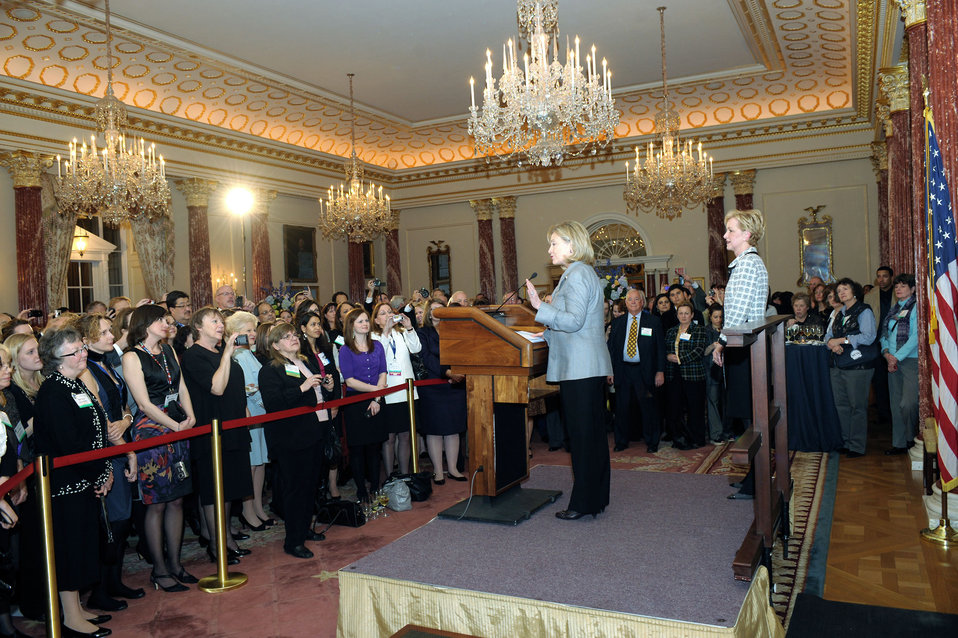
Secretary Clinton Delivers Remarks

U.S. Secretary of State Hillary Rodham Clinton, with Assistant Secretary of State for Educational and Cultural Affairs Ann Stock, delivers the welcoming remarks at the reception celebrating the National Council for International Visitors’ 50th Anniversary and the International Visitor Leadership Program’s 70th Anniversary in the Franklin Room at the U.S. Department of State in Washington, D.C., on February 17, 2011.